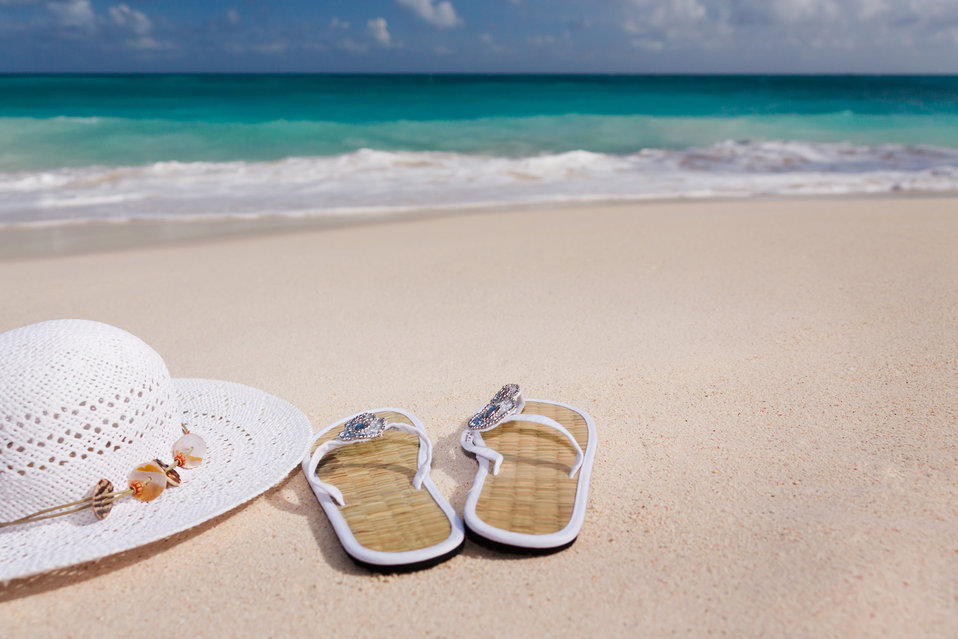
Hat and flip-flops on the beach

White hat and flip-flops on the beach with blue sea in the background.